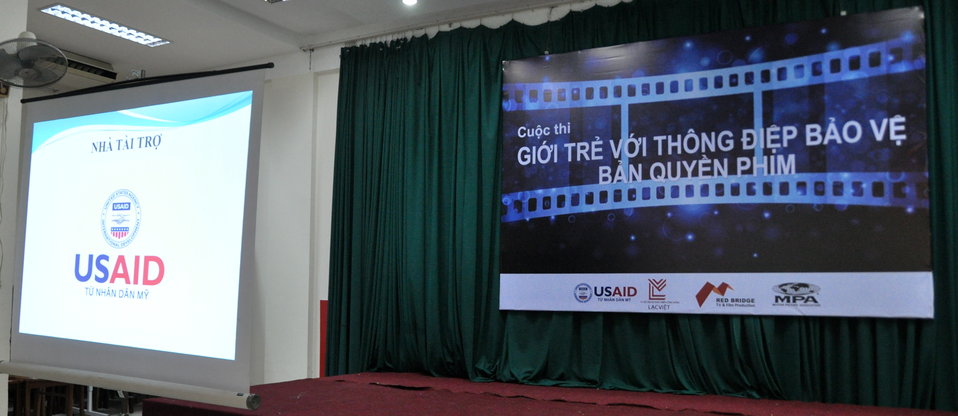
20130801 Hanoi IPR student scriptwriting contest Cabi Nguyen444